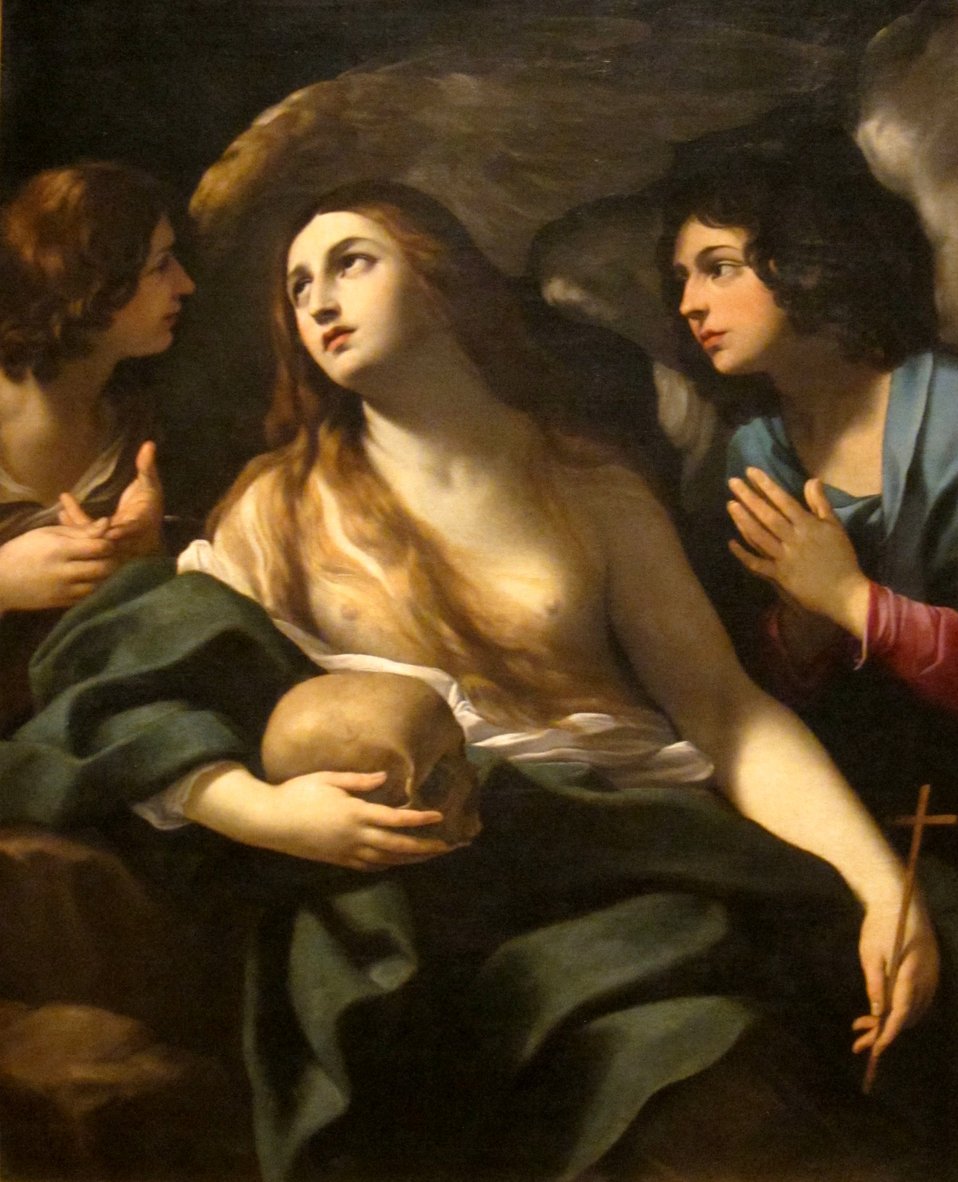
'Mary Magdalen between Two Angles', circle of Guido Reni, Dayton Art Institute